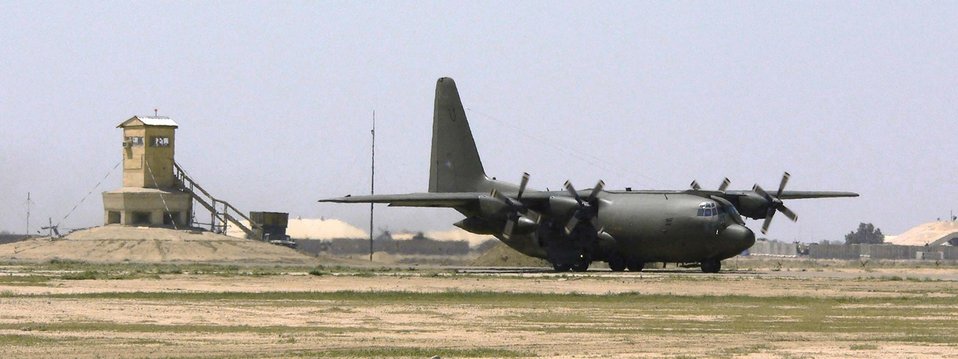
Airmen reflect on 6th anniversary of Operation Iraqi Freedom

A C-130 Hercules passes by the temporary air control tower nicknamed the